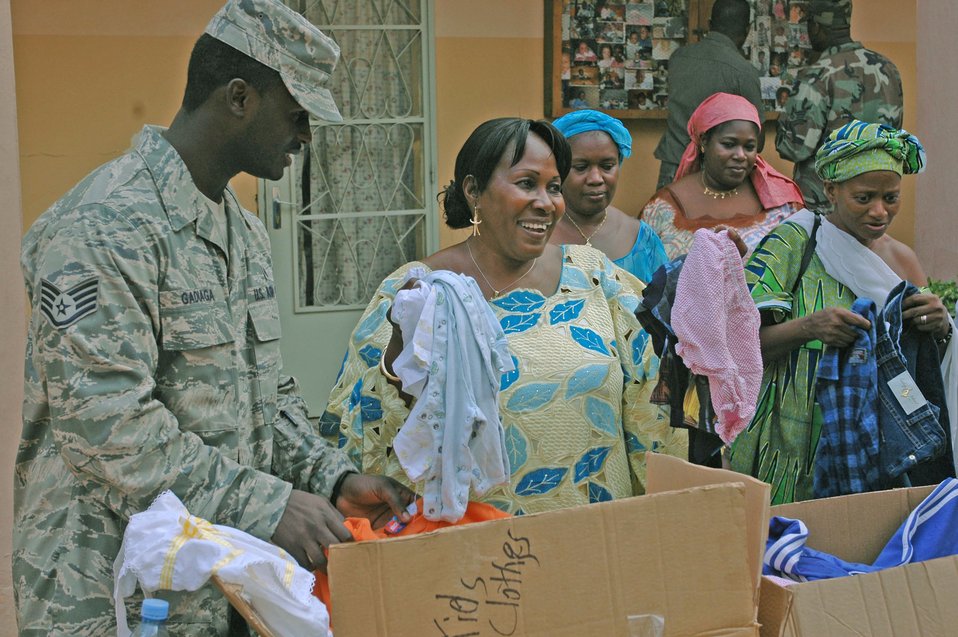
Airmen donate clothes to Malian orphanage

Staff Sgt. Mouhamed Gadiaga presents Nene Duattara, Bamako National Orphanage director, with boxes of donated clothes collected from Airmen and their families at Aviano Air Base, Italy. Sergeant Gadiaga is one of more than 90 servicemembers deployed to Bamako for MEDFLAG 08, a multi-national medical training exercise designed to enhance medical capabilities and readiness for U.S. and African forces. Sergeant Gadiaga is assigned to the 31st Medical Group, Aviano Air Base, Italy.